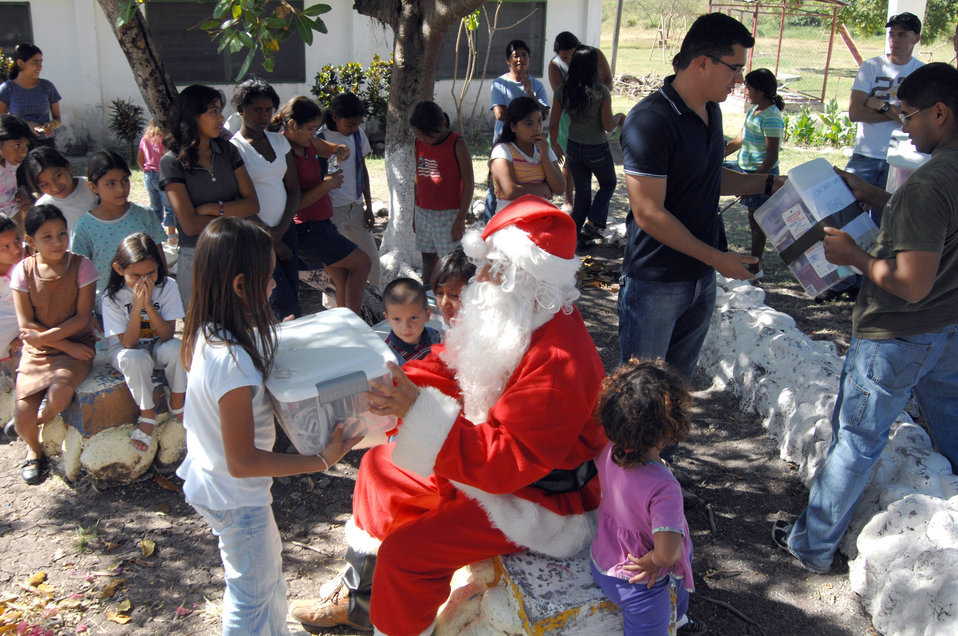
Santa pays an early visit

Santa Claus hands out presents to the children from Hogar San Antonio de Padua Orphanage in Comayagua, Honduras. Operation Christmas Wish is an annual trip made by Airmen from the 1st Special Operations Wing who deliver more than 9,000 lbs of Christmas packages to hundreds of Honduran orphans. Santa is Tech. Sgt. Norman Padilla Cruz from the 1st Special Operations Aeromedical Squadron.